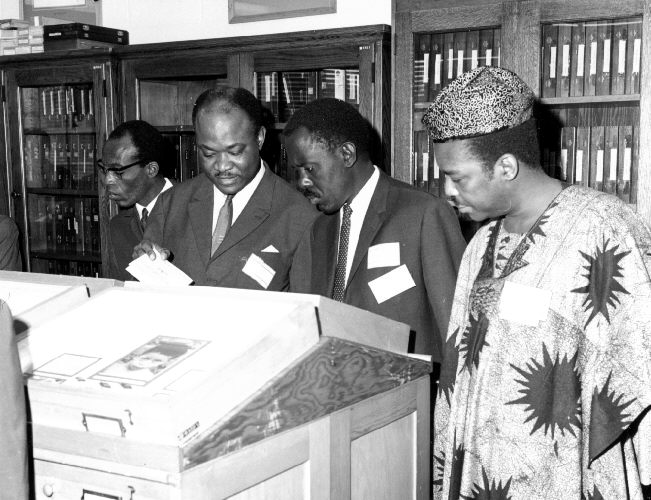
Participants in World Health Assembly (1969) visiting Vector-Borne Museum at CDC.